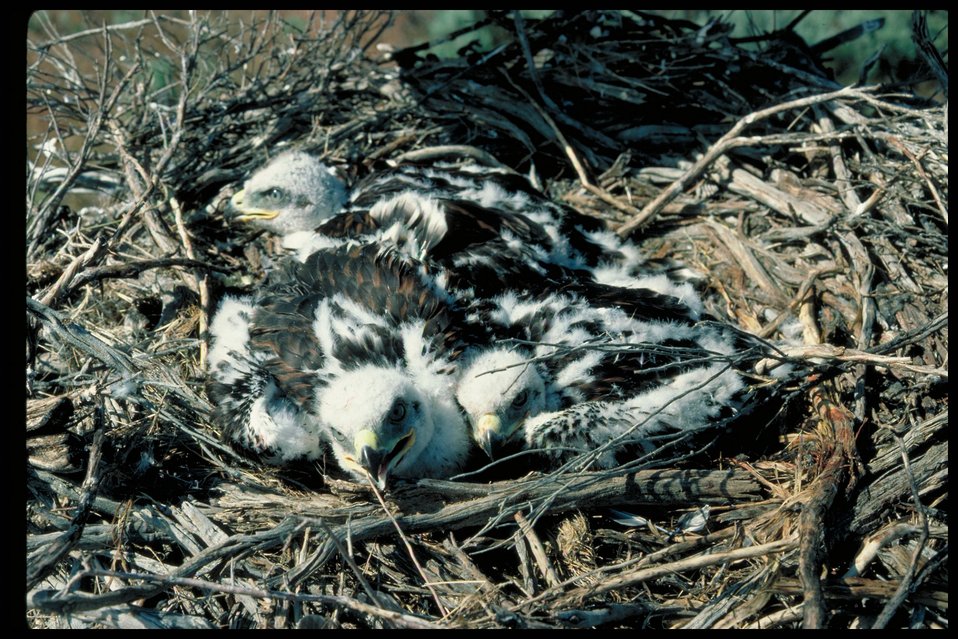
Slaters Flat Ferrugenous Hawk Birds of Prey National Conservation Area BOP Owyhee Field Office LSRD Lower Snake River District